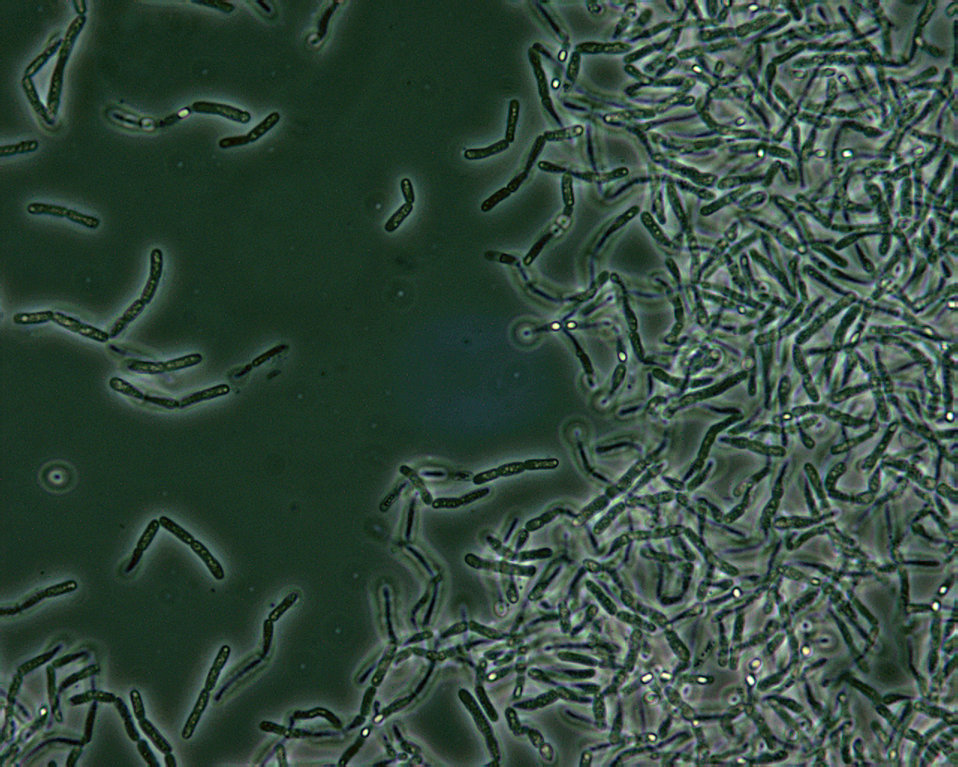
Bacillus anthracis spores seen under phase contrast microscopy.